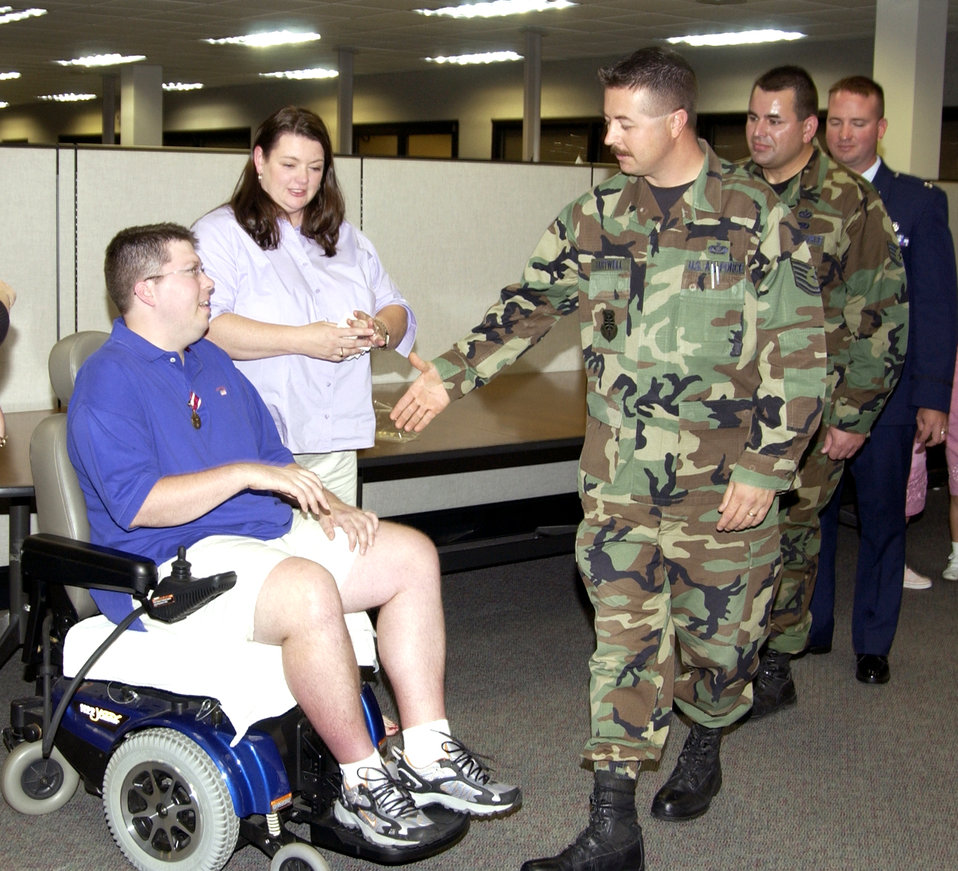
Sergeant retires

Tech. Sgt. Jason Whitman and his wife, Tracy, receive congratulations after his retirement ceremony March 29 for 11 years of service. Sergeant Whiteman was diagnosed with Lou Gehrig's disease in January 2005.